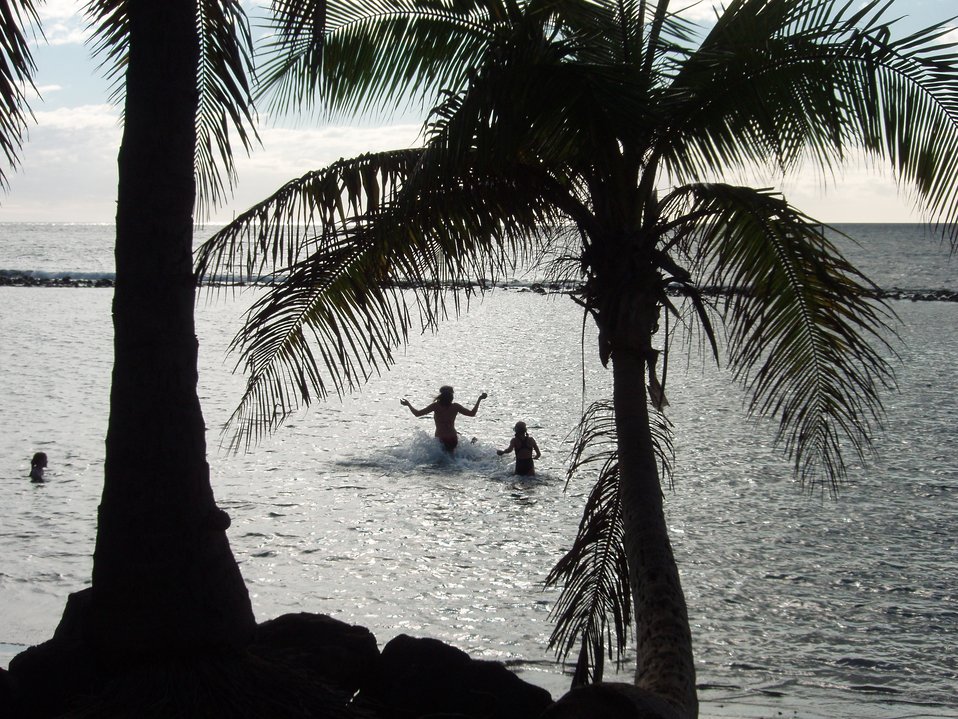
Time for a dip in an enclosed fish pond.